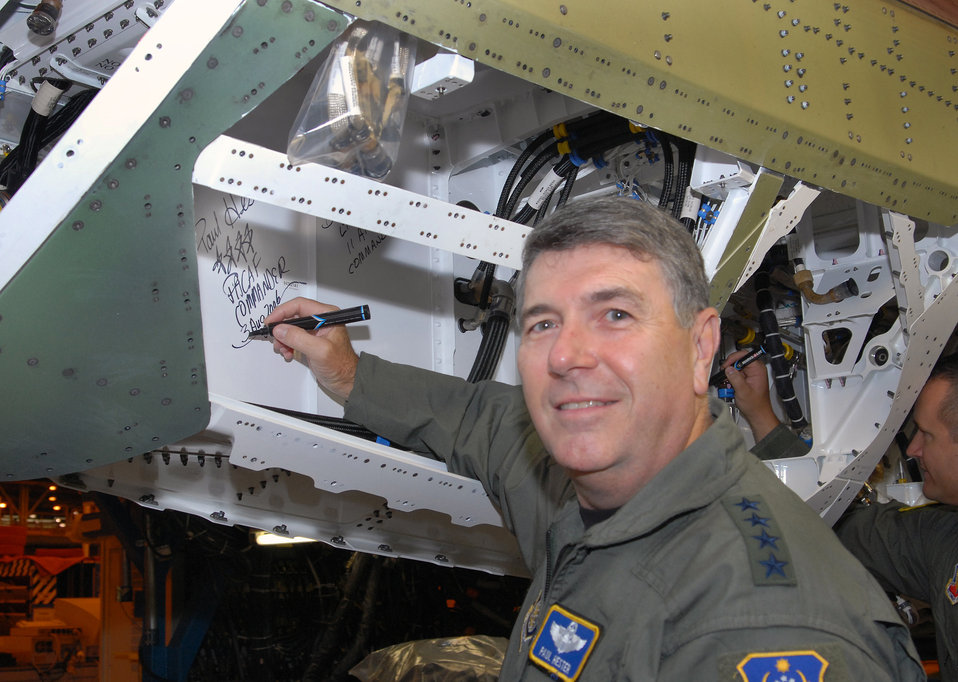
PACAF unveils first F-22

Gen. Paul Hester, Pacific Air Forces commander, signs the tail section of an F-22 Raptor being assigned to PACAF during an unveiling ceremony Aug 3 at the Lockheed Plant in Marietta, Ga. The aircraft, which is still under construction, will be the first of 36 F-22s assigned to Elmendorf Air Force Base, Alaska, beginning next year.